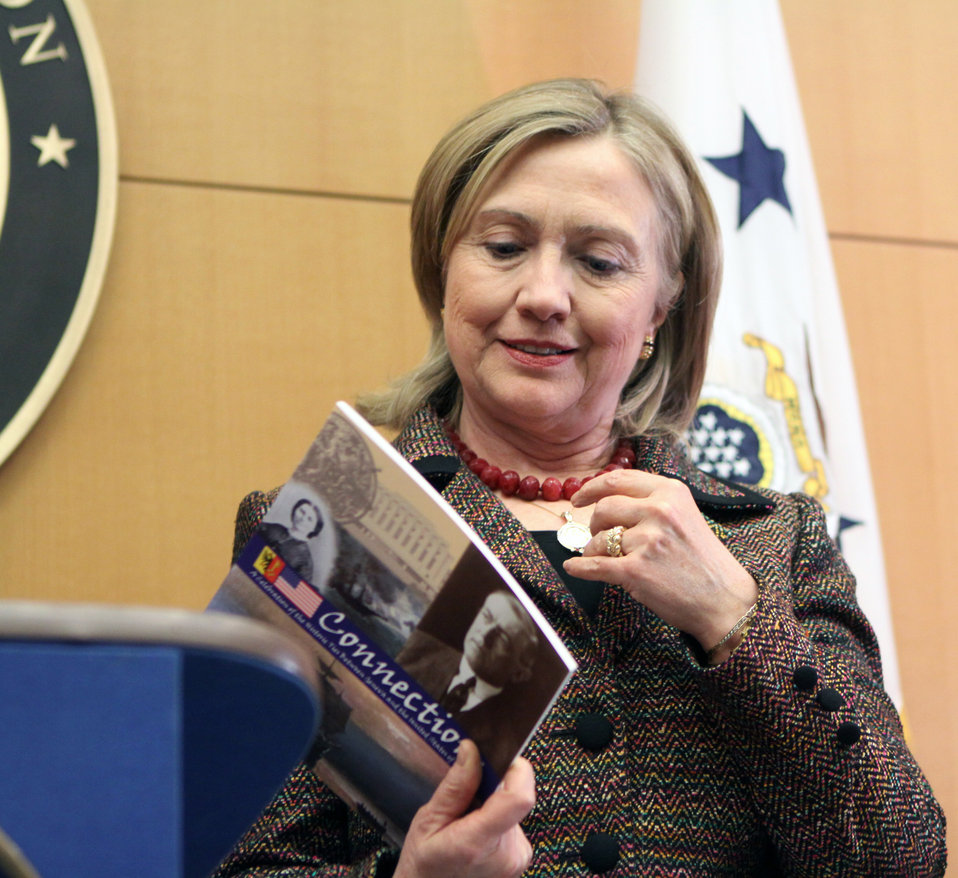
Secretary Clinton Looks at 'Connections: The Historic Ties Between Geneva, Switzerland and the United States of America'

U.S. Secretary of State Hillary Rodham Clinton looks at a copy of “Connections: The Historic Ties Between Geneva, Switzerland and the United States of America,” a new publication of the U.S. Mission to the United Nations in Geneva on February 28, 2011.